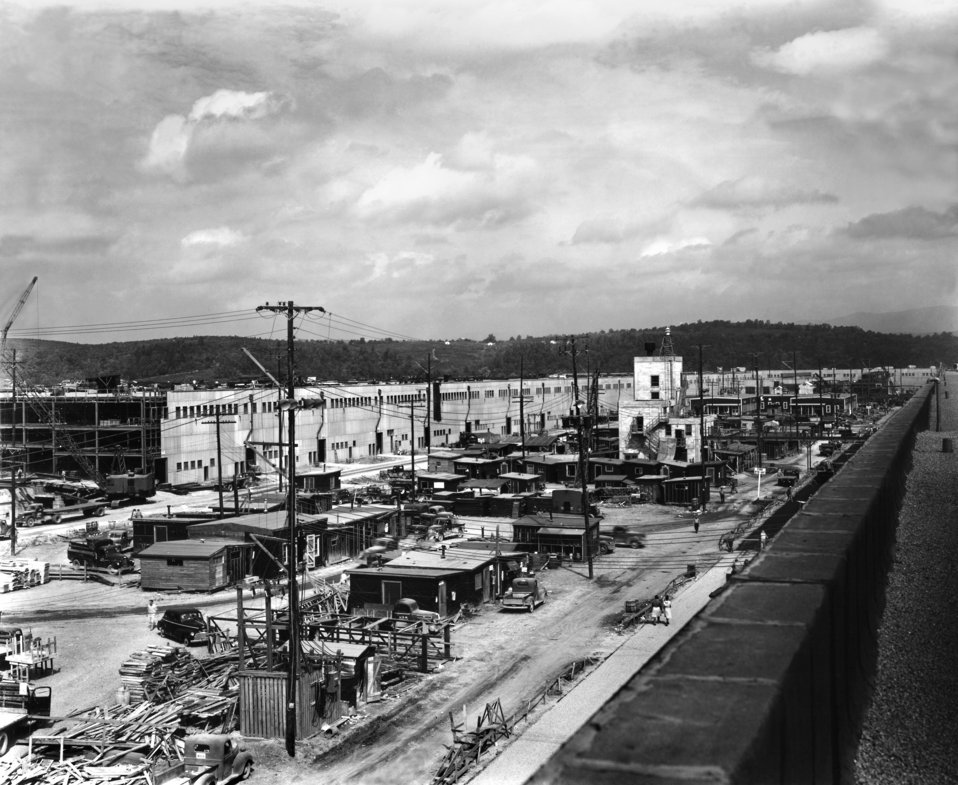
Construction in Center of 'U' Building K-25 Oak Ridge

K-25-12 DOE photo Ed Westcott 1944 Oak Ridge Tennessee